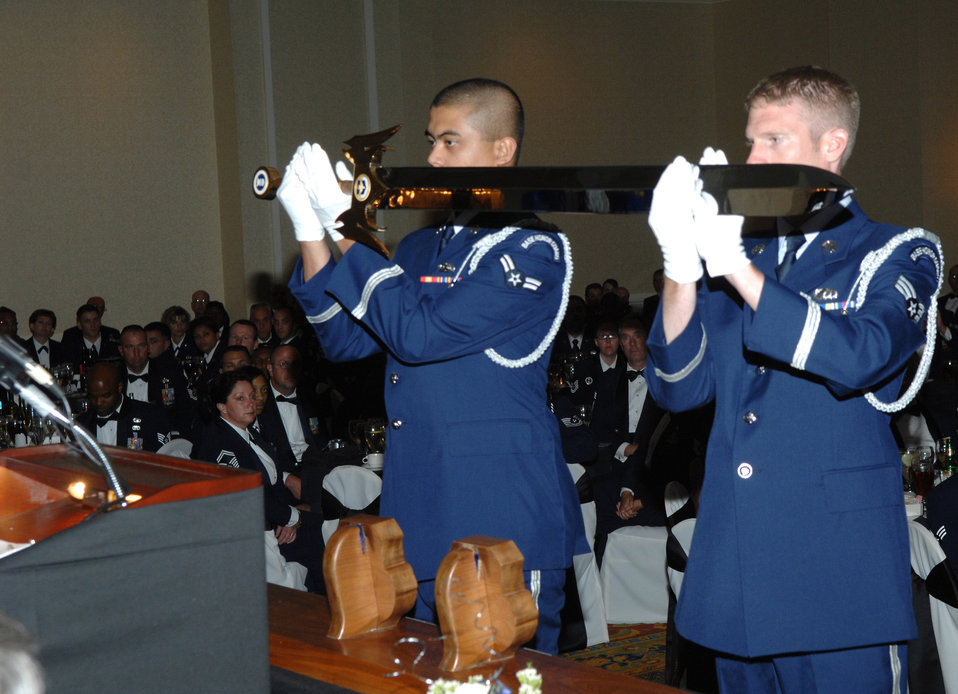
Enlisted members give highest honor to AETC commander

Honor guard members present the Air Education and Training Command sword during the Order of the Sword ceremony for Gen. William R. Looney III May 30 in San Antonio. General Looney is the AETC commander.